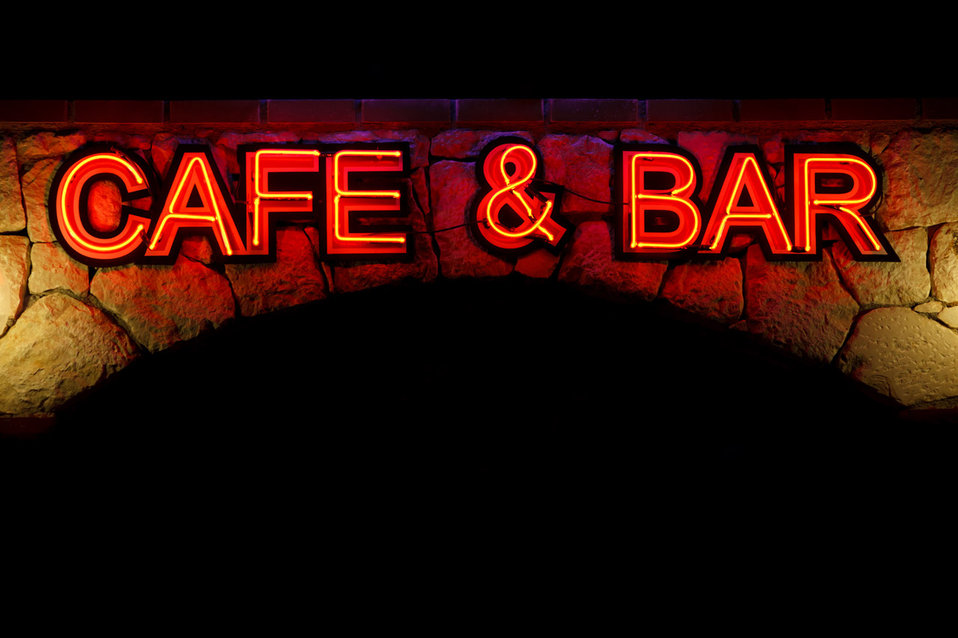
Cafe neon sign

Cafe and bar neon sign at night.